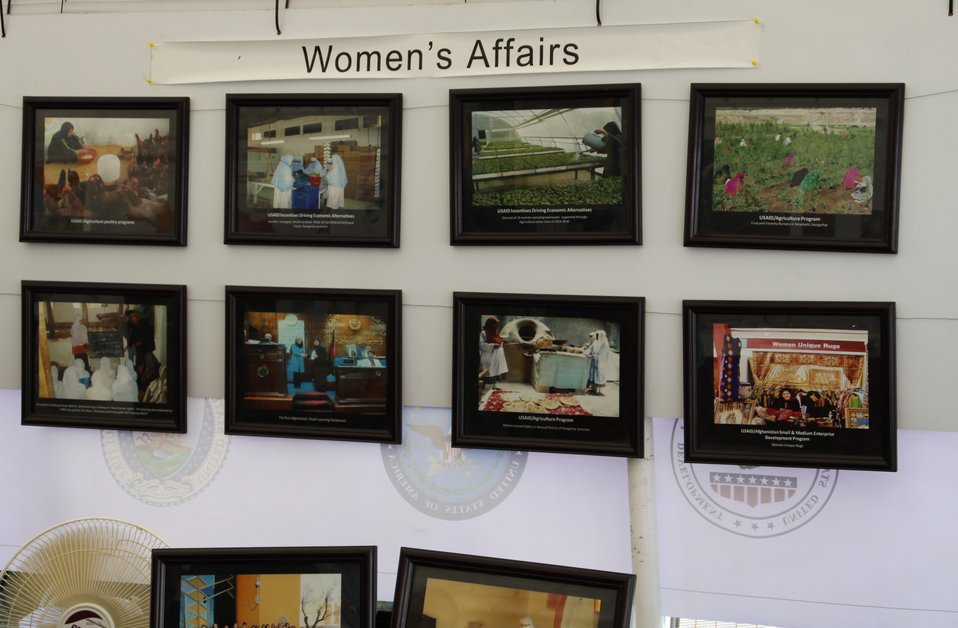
Kabul Official July 4th Celebration